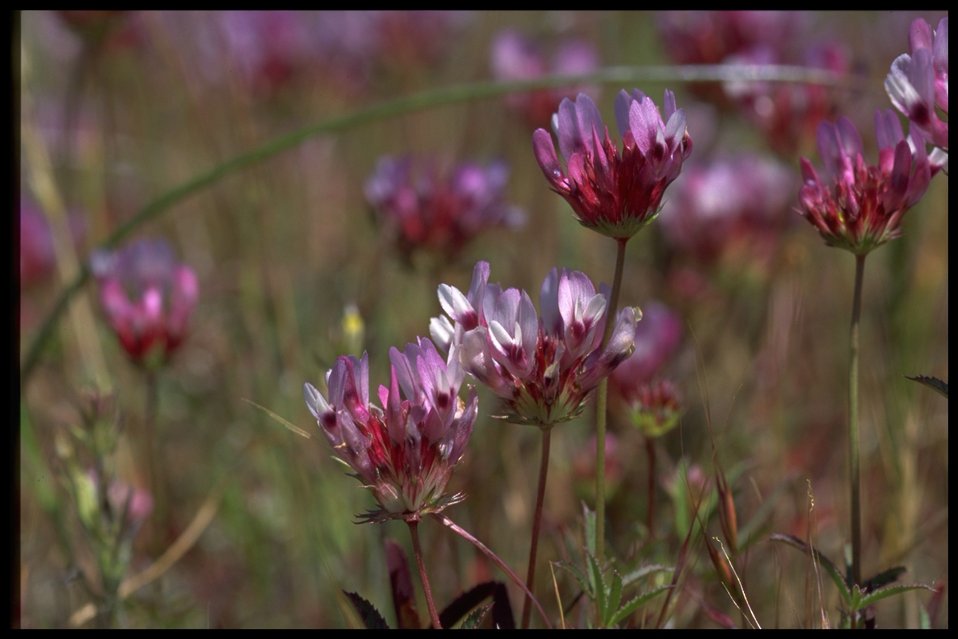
Closeup shot of Trifolium depauperatum.